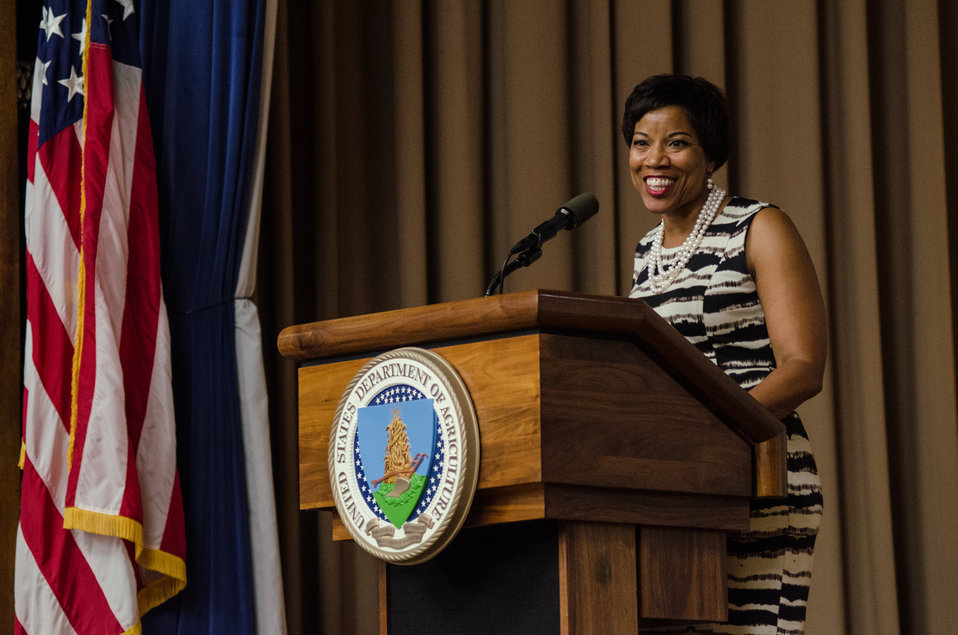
U.S. Department of Agriculture (USDA) Deputy Administrator for Operations and Management Edna Primrose welcomes USDA Rural Development’s (RD) employees to the 2nd Annual Cultural Transformation kickoff opening ceremony and forums, themed “Employees Influencing Change,” on Tuesday, Aug.t 13, 2013 at USDA in Washington, D.C.